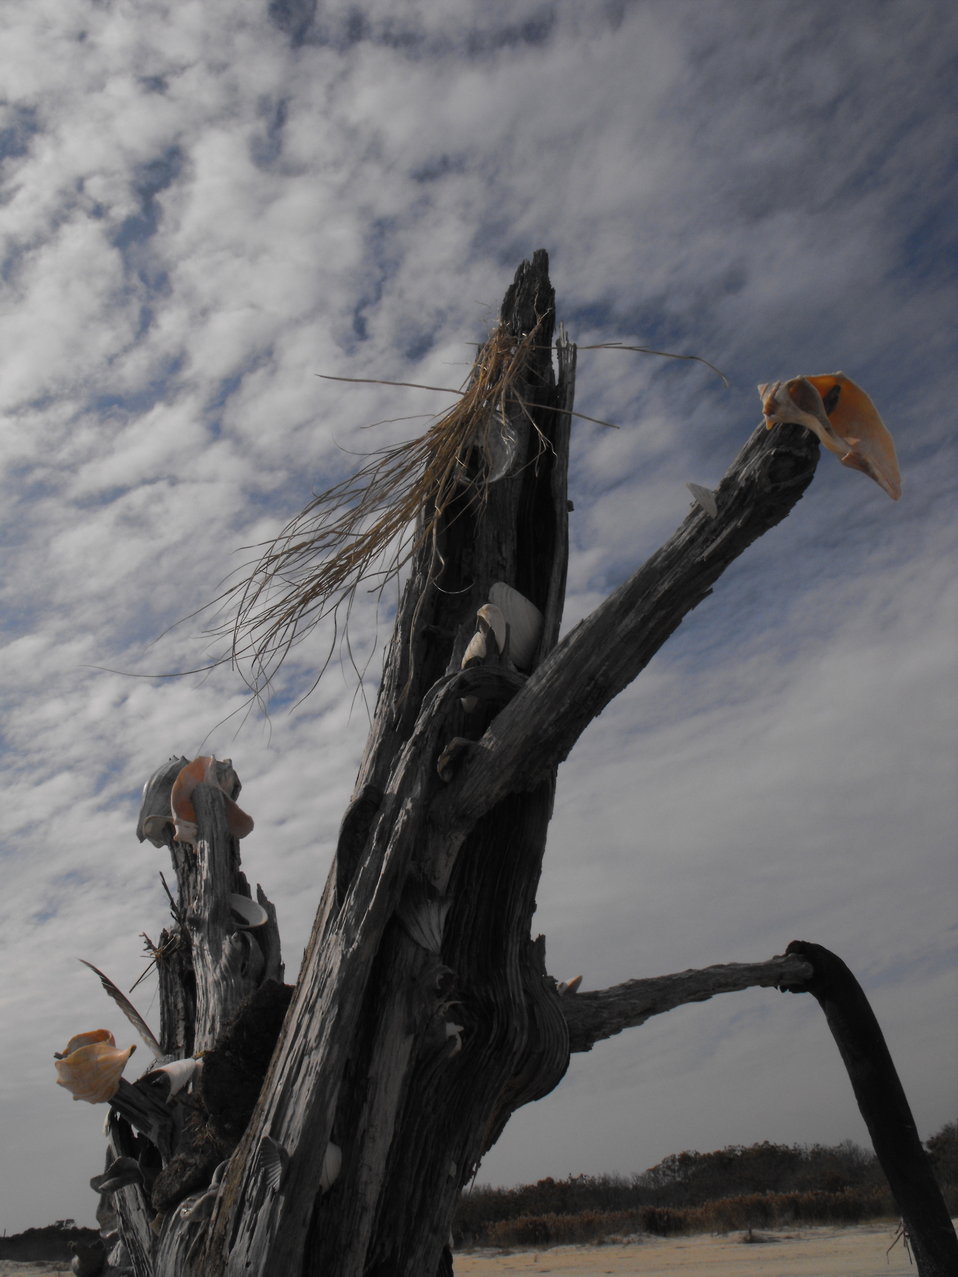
Shell tree

One of the 'shell trees' on Wild Beach at Chincoteague National Wildlife Refuge / Assateague Island National Seashore (NPS). Visitors like to decorate the remnants of trees, once in the marsh, but now overtaken by the beach as it shifts.